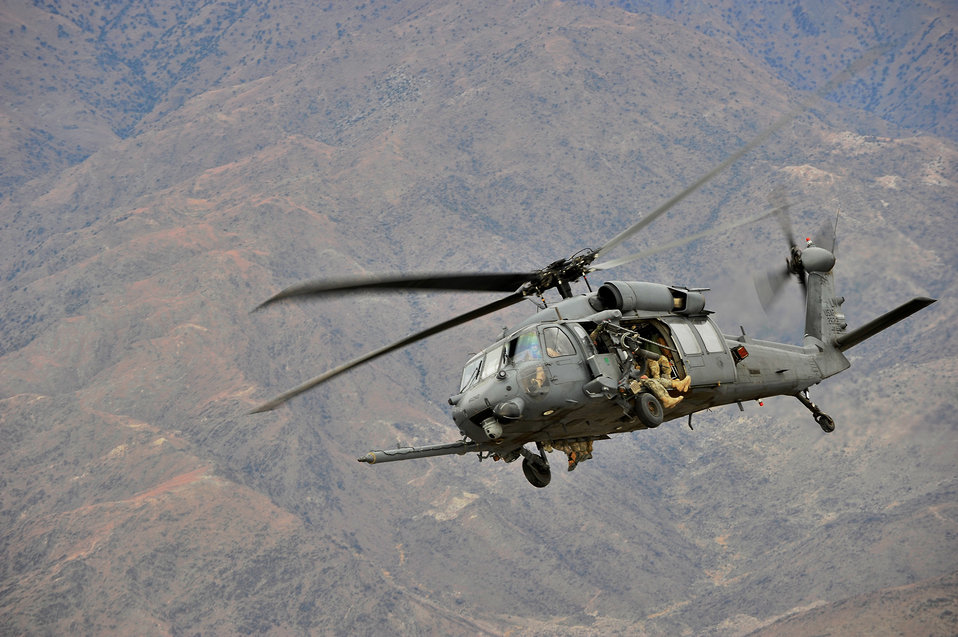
A Hawk in flight

An HH-60G Pave Hawk flies April 23, 2011, above Southwest Asia.